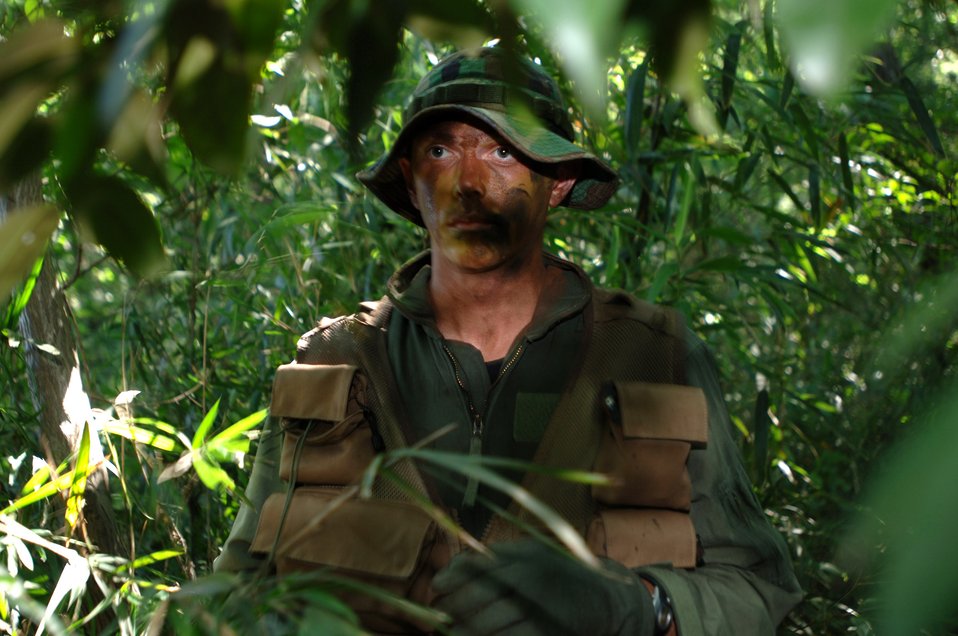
Playing with the enemy

YOKOTA AIR BASE, Japan -- Airman 1st Class Ron Rabineau looks out for enemy forces after his aircraft was